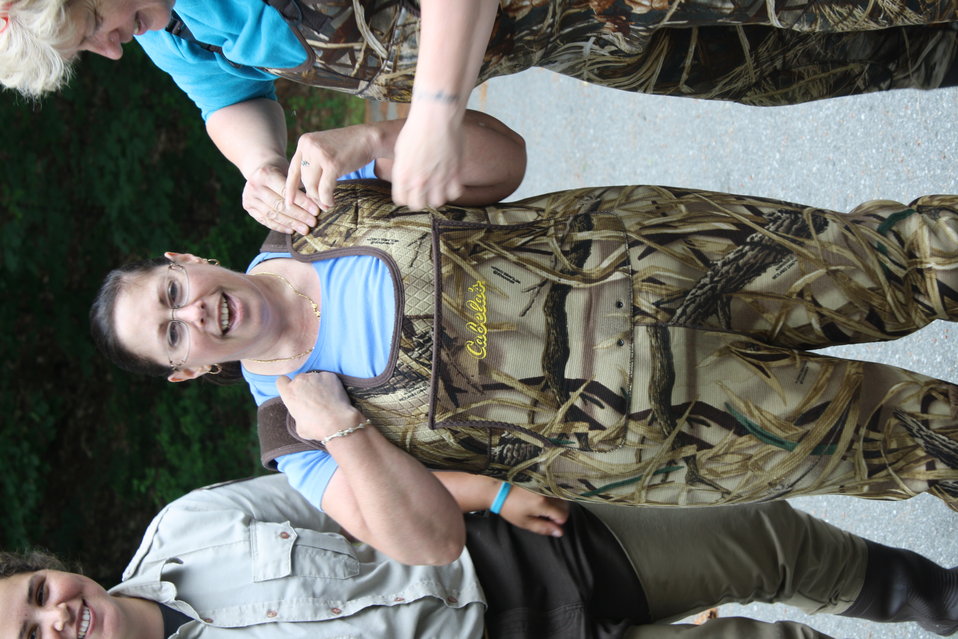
Nashua National Fish Hatchery welcomes regional office employees

Service staff in waders.